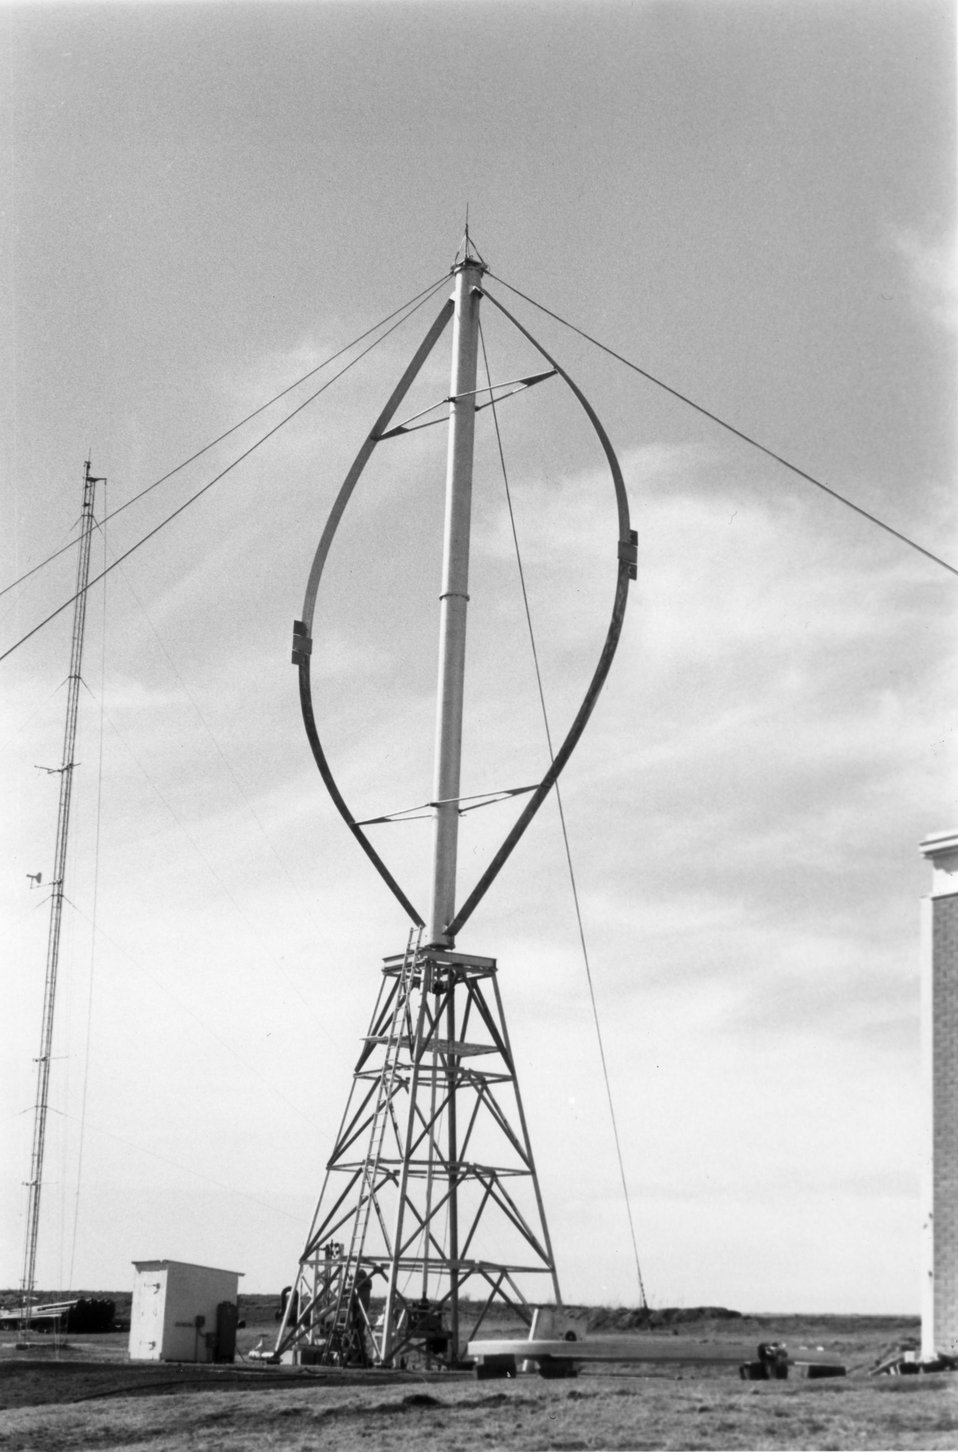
A 55-foot vertical axis wind turbine is being used to help pump water for crop irrigation in a Texas experiment. c. 1978